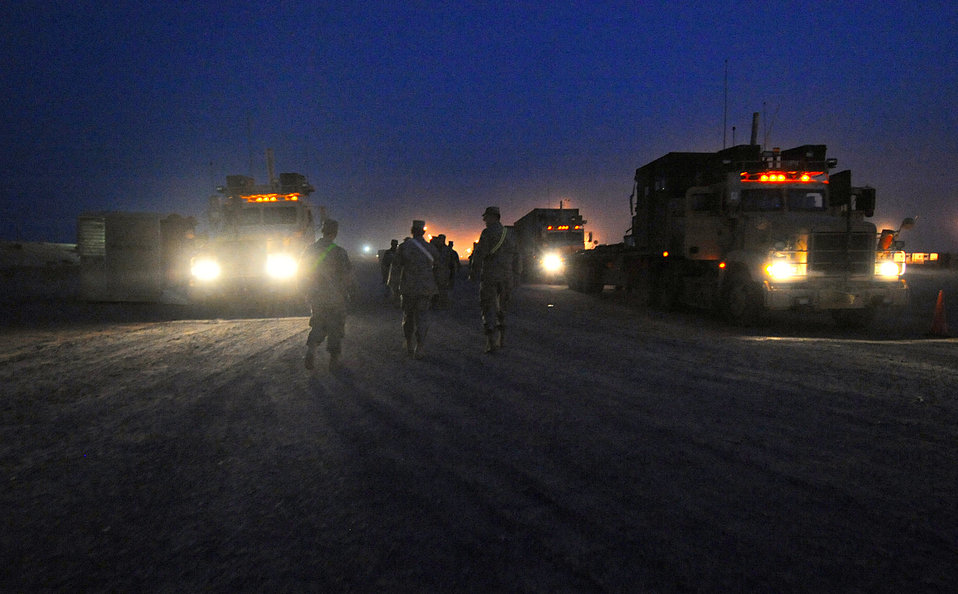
Convoy in Southwest Asia

Airmen are greeted by squadron, group and wing leaders upon their return from a convoy mission May 4, 2011, in Southwest Asia.